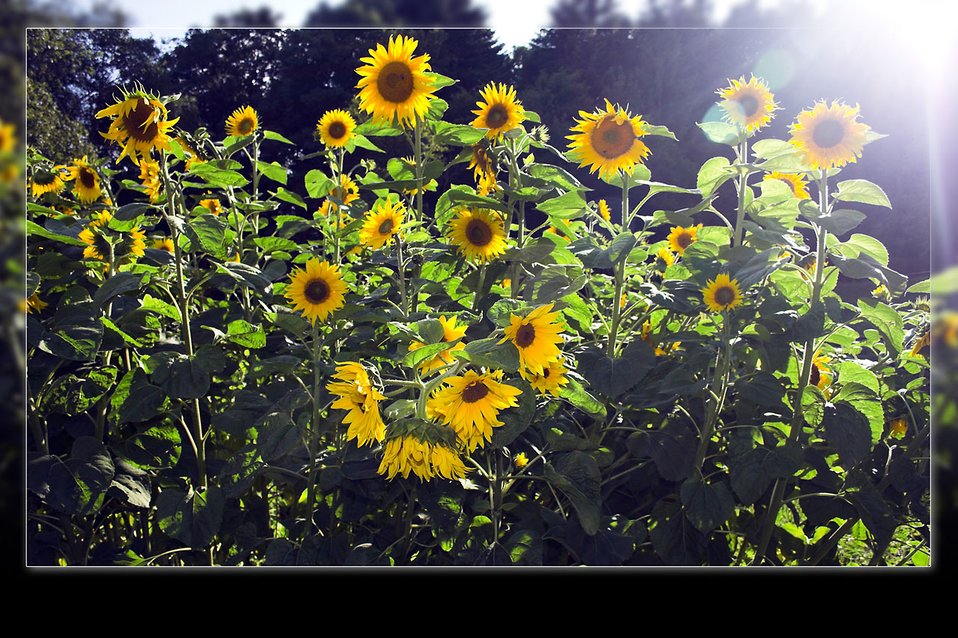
Sunflowers

A field of sunflowers in blossom.